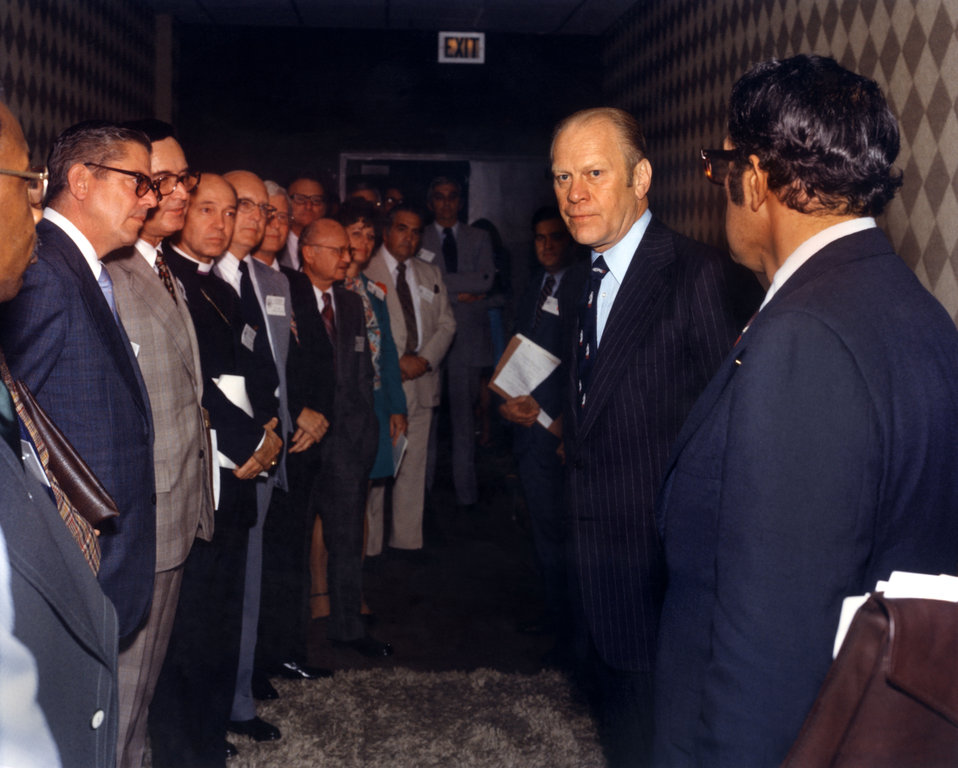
President Gerald Ford at Mid-Appalachia Governors Meeting Knoxville

75-371 DOE photo by Frank Hoffman

President Gerald Ford at Mid-Appalachia Governors Meeting Knoxville Tennessee 10-7-1975